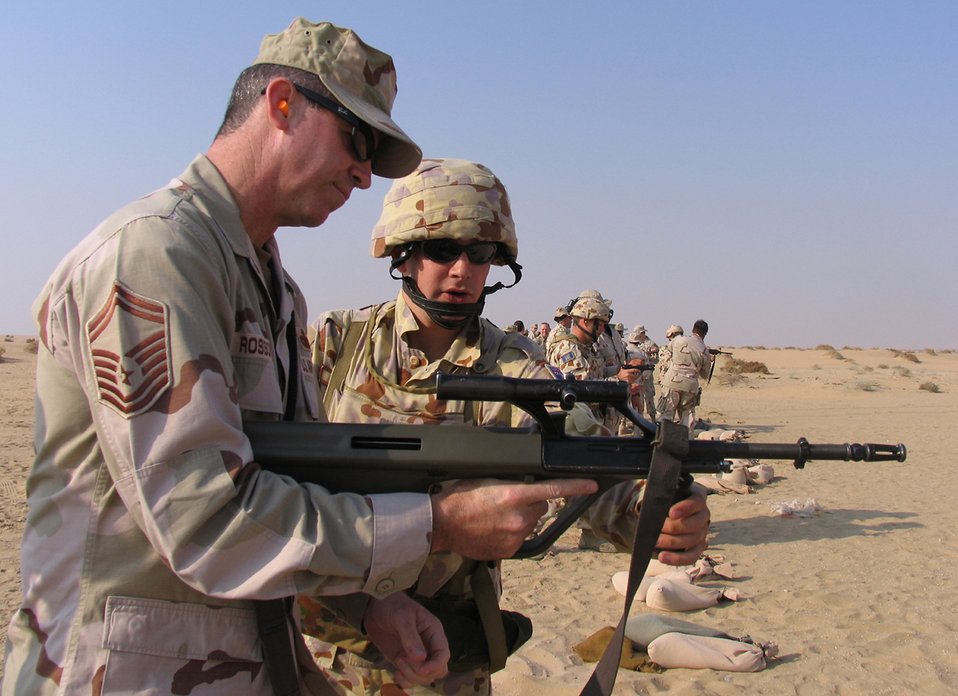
Assault rifle

SOUTHWEST ASIA (AFPN) -- Senior Master Sgt. Matt Rossoni learns how to use an assault rifle used by Australian forces deployed here. Sergeant Rossoni is deployed from the 18th Security Forces Squadron at Kadena Air Force Base, Japan.